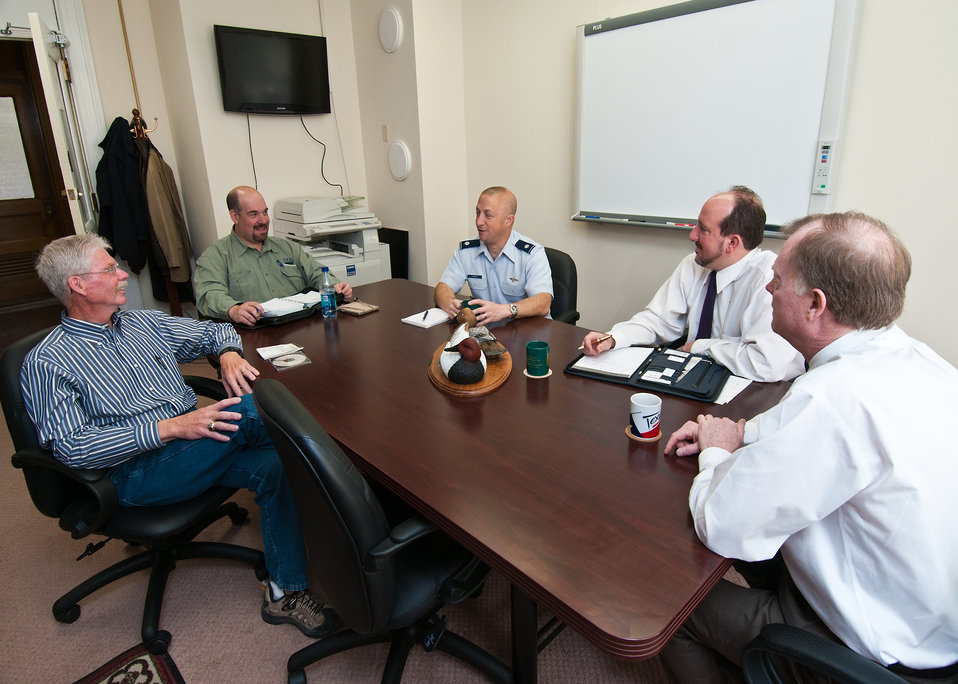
110308 APHIS RBN 2557

Clockwise from left: George Graves, Wildlife Biologist, United States Department of Agriculture, Animal and Plant Health Inspection Service, Wildlife Services, Boise, Idaho, Chris Bowser, Wildlife Biologist, Logistical Support, USDA, APHIS, Wildlife Services, Lt. Col. Gary Rudman, Deputy Director, Safety, United States Air Force Central, Michael Begier, National Coordinator, Airport Wildlife Hazards Program, USDA, APHIS, Wildlife Services and William Clay, Deputy Administrator, USDA, APHIS, Wildlife Services; Bowser and Graves were being debriefed on their detail to Iraq participating in a program initiated by Rudman and Begier to deploy USDA, APHIS, Wildlife Biologists to assist in keeping runway operations free of wildlif , at the U.S. Department of Agriculture in Washington, D.C., on Tuesday, March 8, 2011.